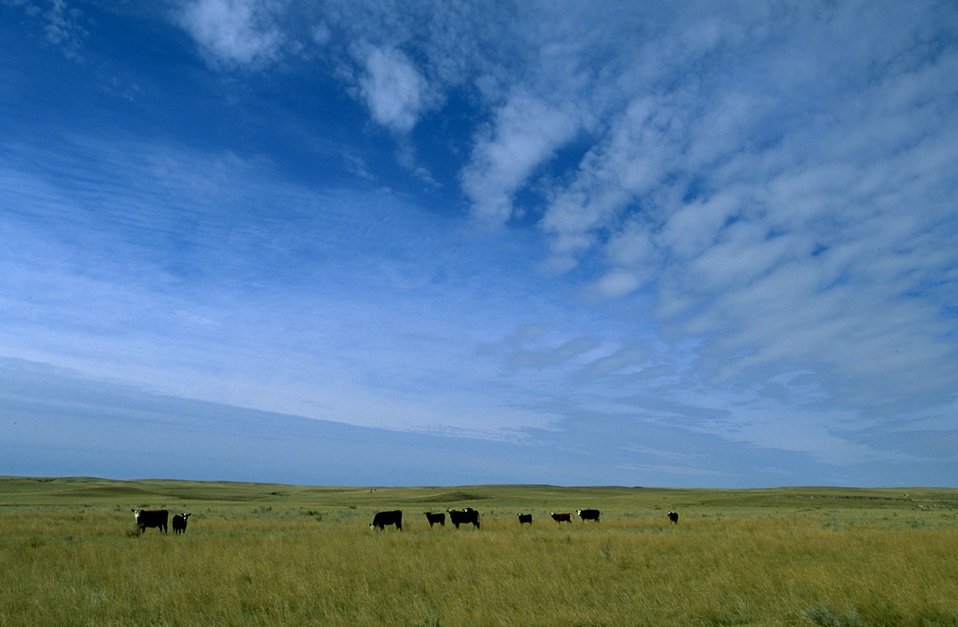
Cattle grazing under the Big Sky in eastern Montana